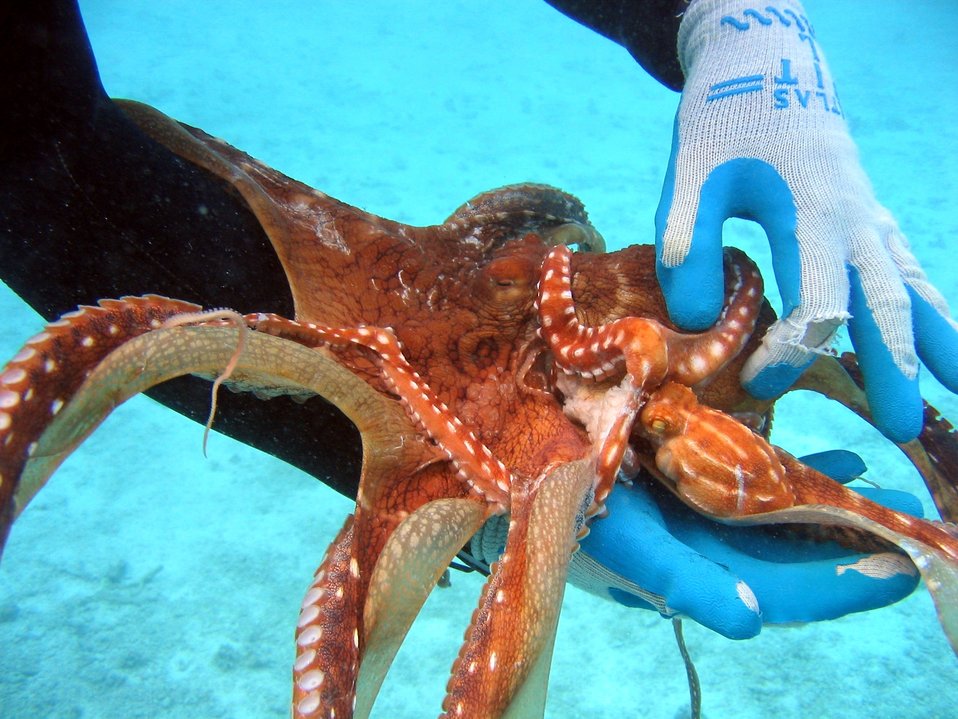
An ornate octopus (Octopus ornatus).